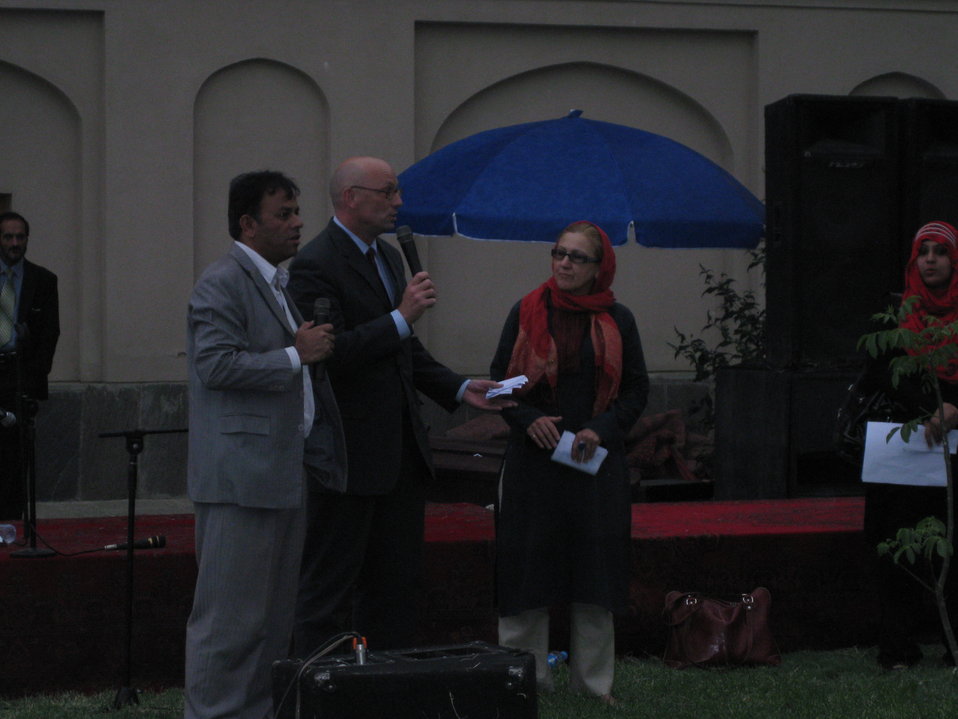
Afghan Youth Voices 113